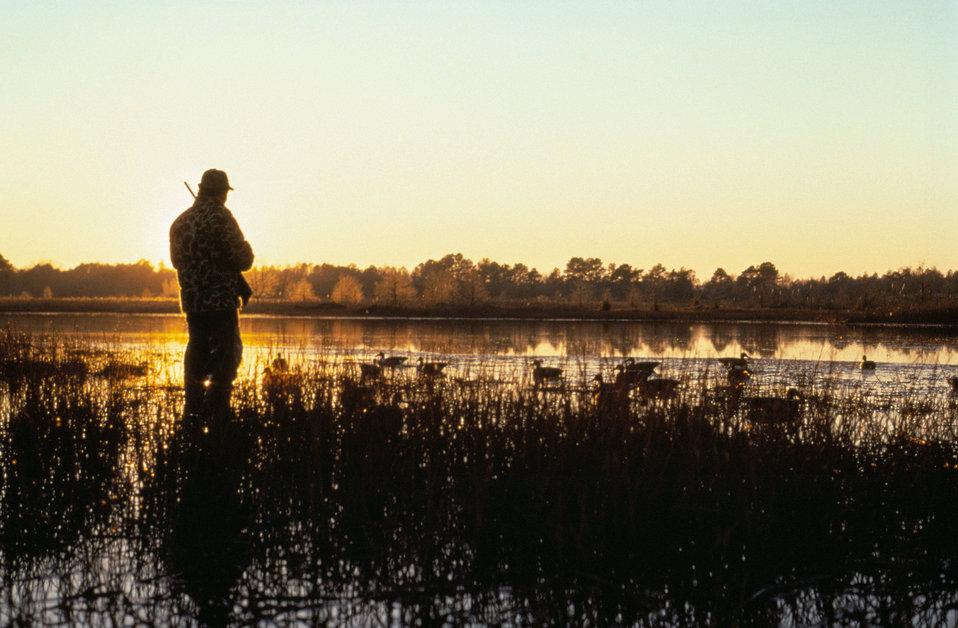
Beauty of the Hunt

Photo credit: USFWS/Pat Hagan

The availability of culturally, commercially, and recreationally important species for human uses (e.g., fishing, hunting, watching) will also change as species distributions respond to a changing climate and human population pressures